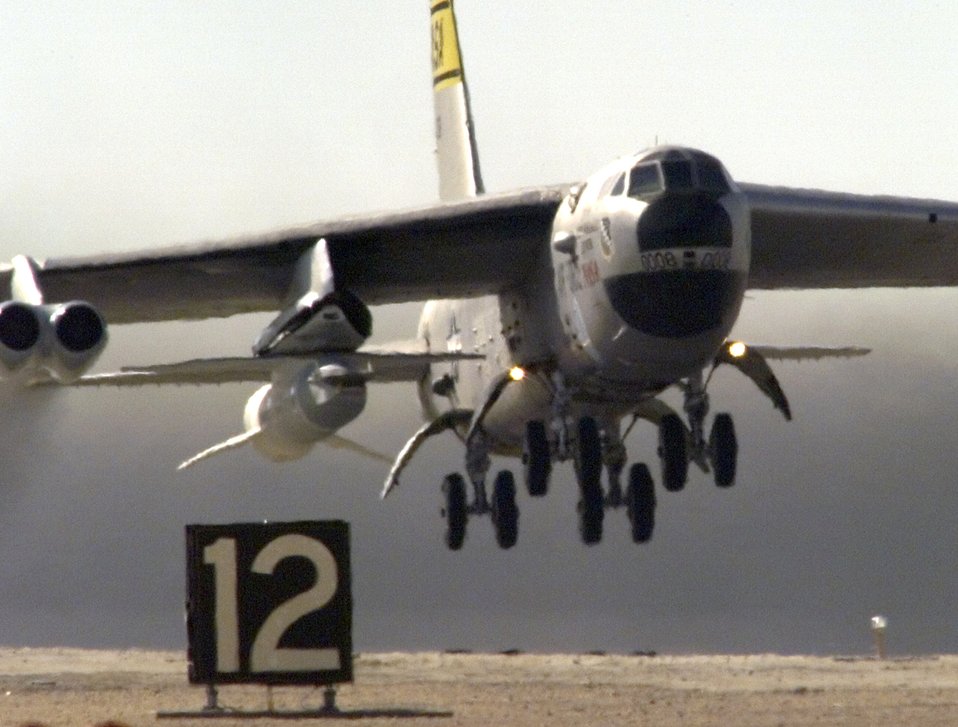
NASA X-43A rockets to Mach 9.8 at Edwards

EDWARDS AIR FORCE BASE, Calif. -- NASA's B-52B launch aircraft takes off from here Nov. 16 carrying a X-43A hypersonic research vehicle attached to a modified Pegasus rocket.